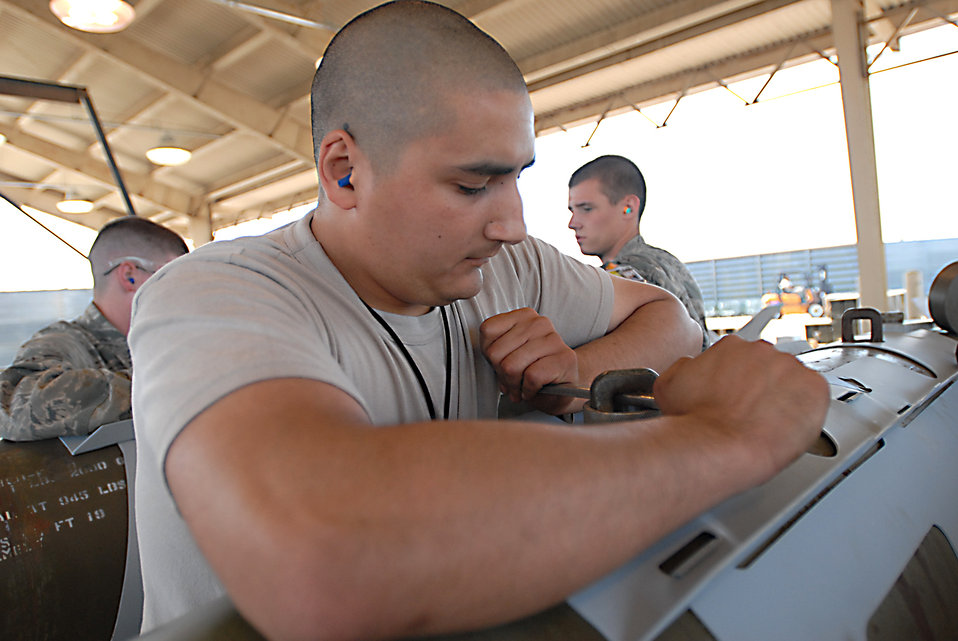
Kadena CAPEX

Staff Sgt. Felipe Hernandez prepares bombs for transport after assembly during the Combat Ammunition Production Exercise June 7, 2011, at Kunsan Air Base, South Korea. Sergeant Hernandez is an 8th Maintenance Squadron conventional maintenance crew chief.